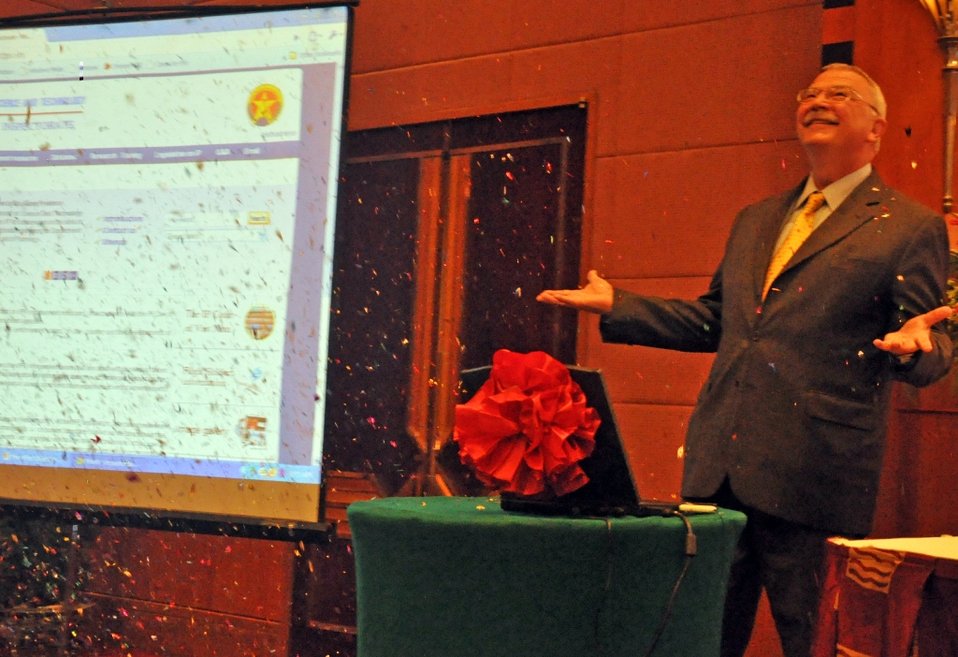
Supporting Vietnam's efforts to enforce intellectual property rights

Ambassador Michael Michalak joins a launch of a USAID-supported portal of the Government of Vietnam with information on enforcing intellectual property rights.